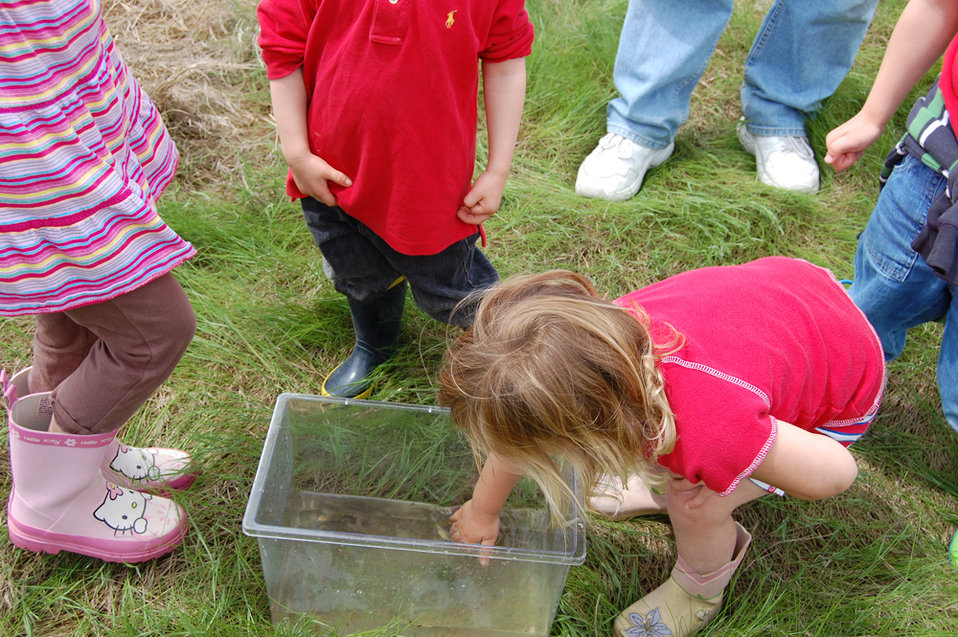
Sense of Wonder Camp

Sring 2009 session of the Sense of Wonder Camp, a camp for children ages 3-4 at Parker River National Wildlife Refuge.Credit: Kate Toniolo/USFWS